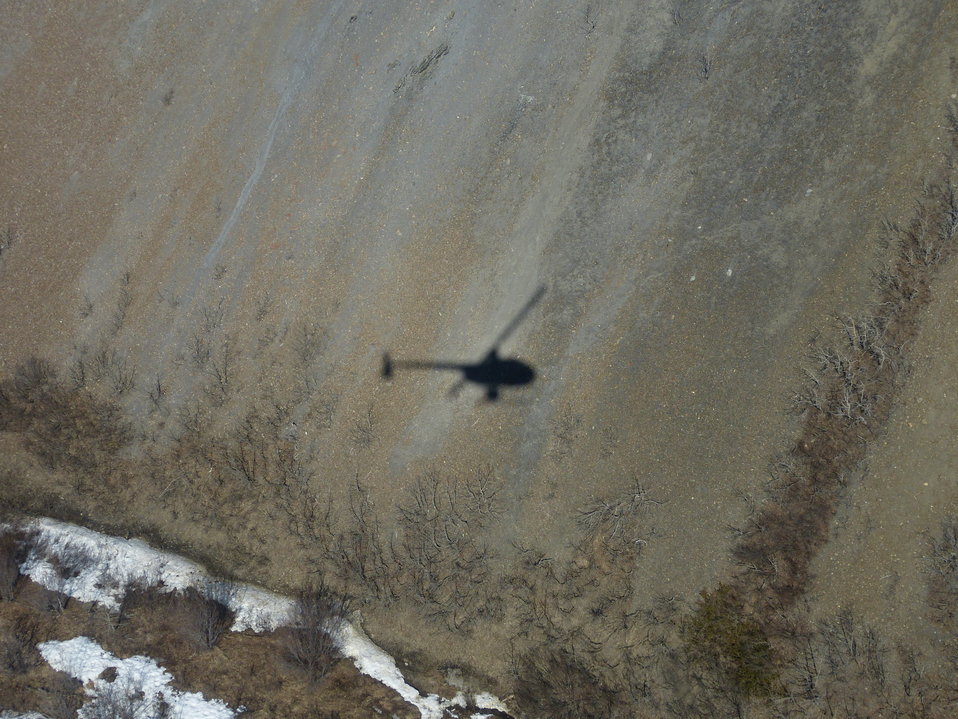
Kilbucks survey 5-13-2013 KSowl

Cliff-nesting raptor survey, Kilbuck Mountains, Yukon Delta National Wildlife Refuge

Photo credit: Kristine Sowl,
USFWS, YDNWR